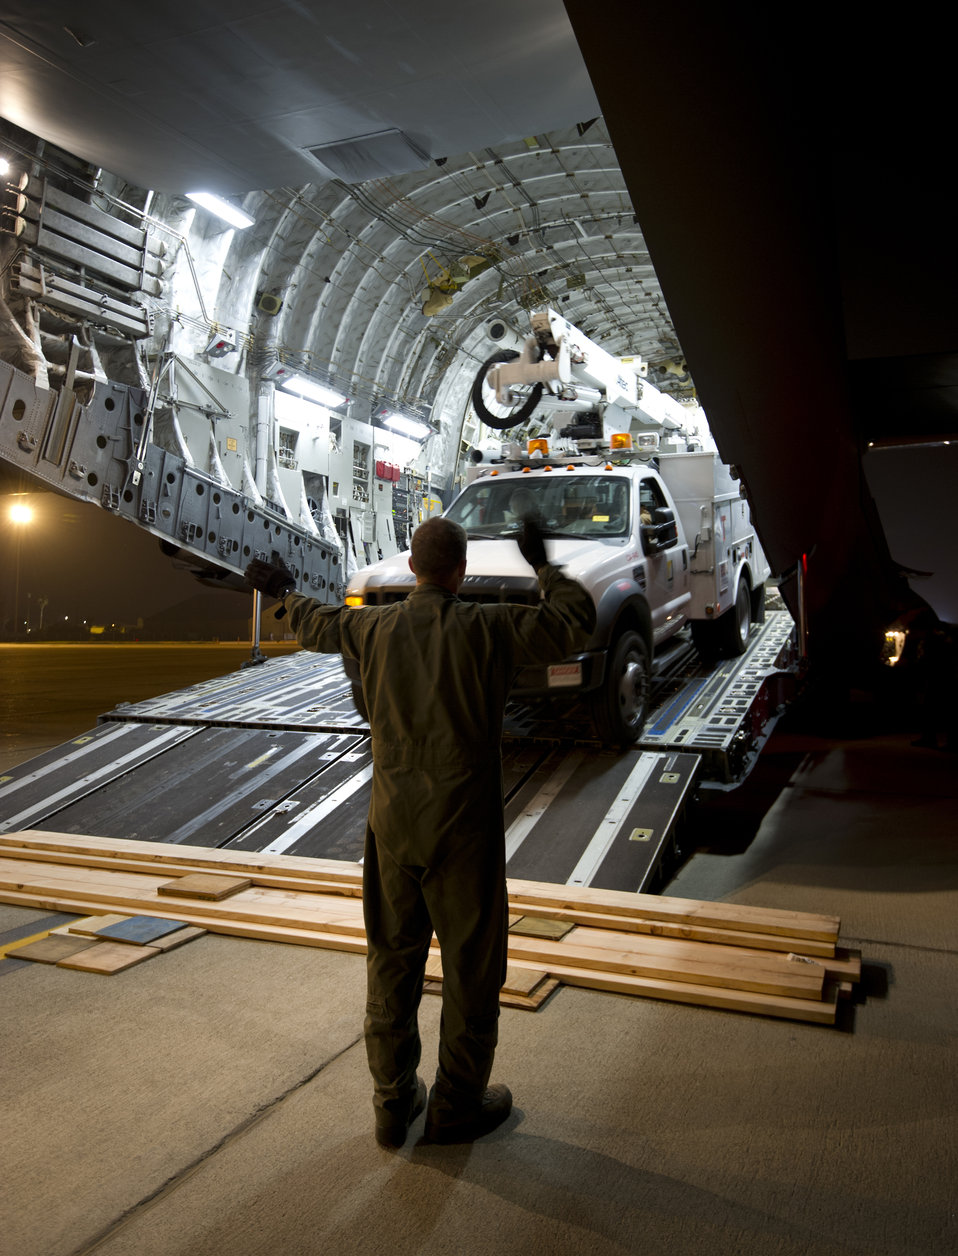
Hurricane relief efforts

Tech. Sgt. Jeffrey Burke, 137th Airlift Squadron loadmaster, directs a Southern California Edison utility vehicle as it is loaded onto a C-17 Globemaster III at March Air Reserve Base, Calif., Nov. 1, 2012. Military bases across the nation are mobilizing to the northeast region of the country to restore electricity and provide humanitarian assistance, as currently more than two million people are without power.